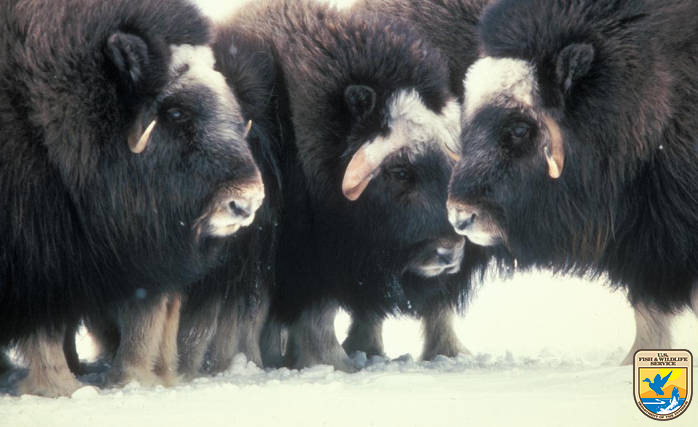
Muskox on Nunivak Island, Alaska